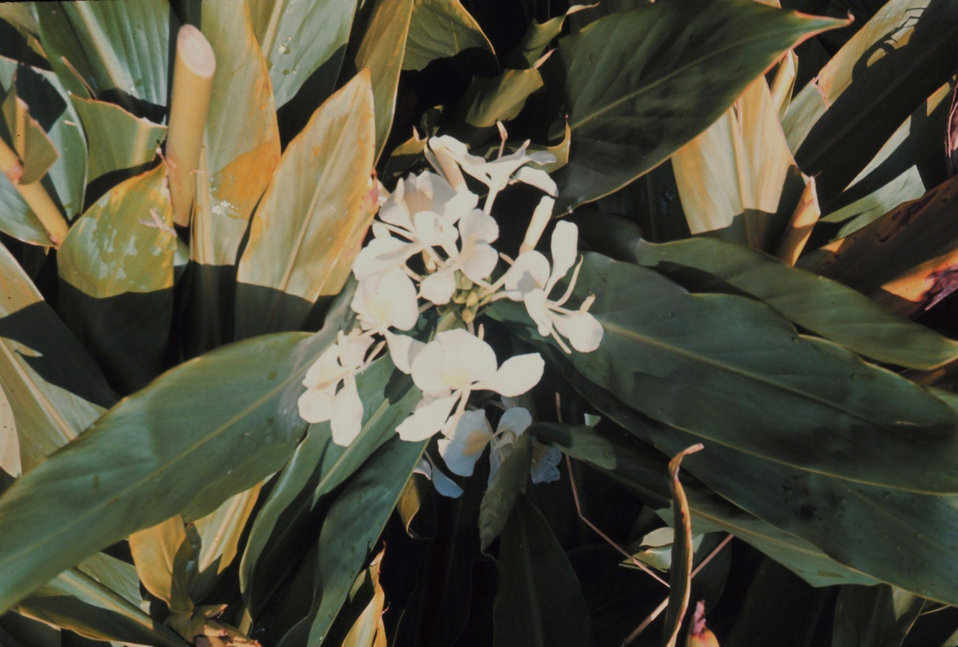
Hawaiian flowers